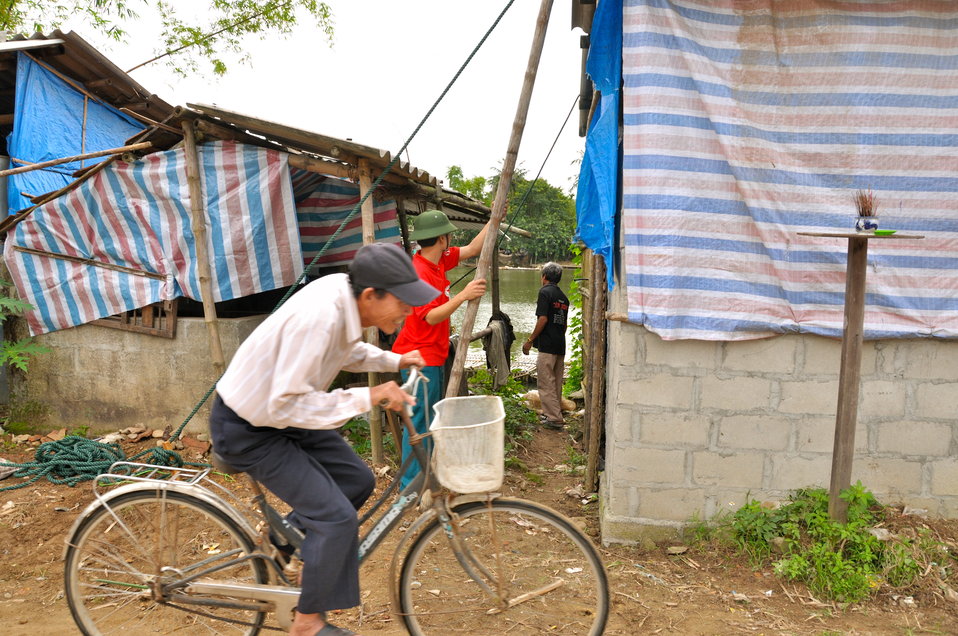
USAID and Save the Children support community evacuation drill and emergency preparedness in central Vietnam

Loc An Commune, Phu Loc District, Thua Thien Hue Province
December 4, 2012, Photo: Richard Nyberg, @USAIDVietnam